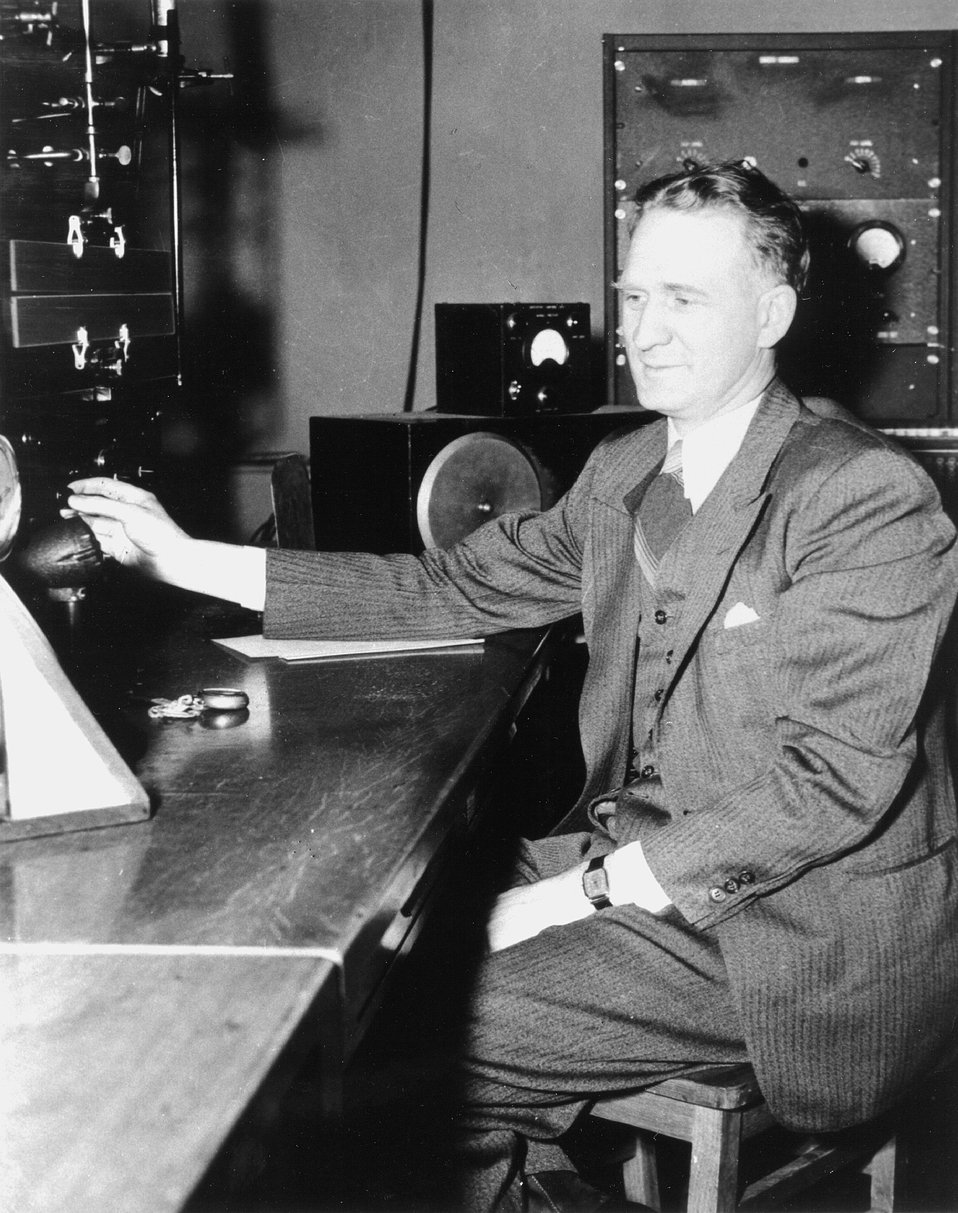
W. H. Zinn at controls of CP-2.